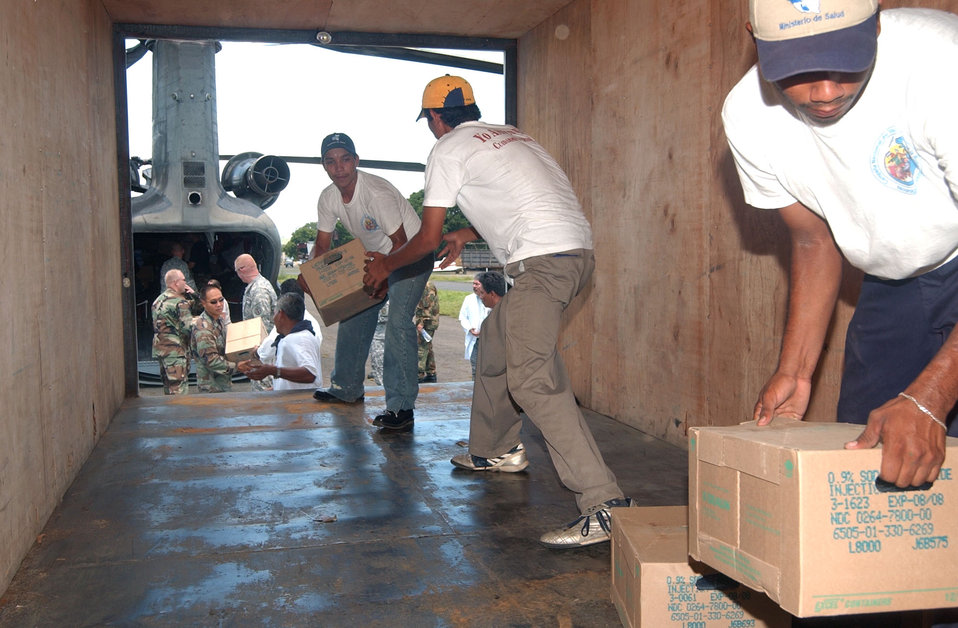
U.S. military gives medical equipment to Nicaragua

Staff from the Nicaragua Ministry of Health and U.S. servicemembers load medical supplies onto a truck at the airport in Leon, Nicaragua, Sept. 13. Joint Task Force-Bravo members at Soto Cano Air Base, Honduras, donated more than $185,000 worth of medical equipment and supplies to a hospital where people were being treated after an alcohol poisoning epidemic.